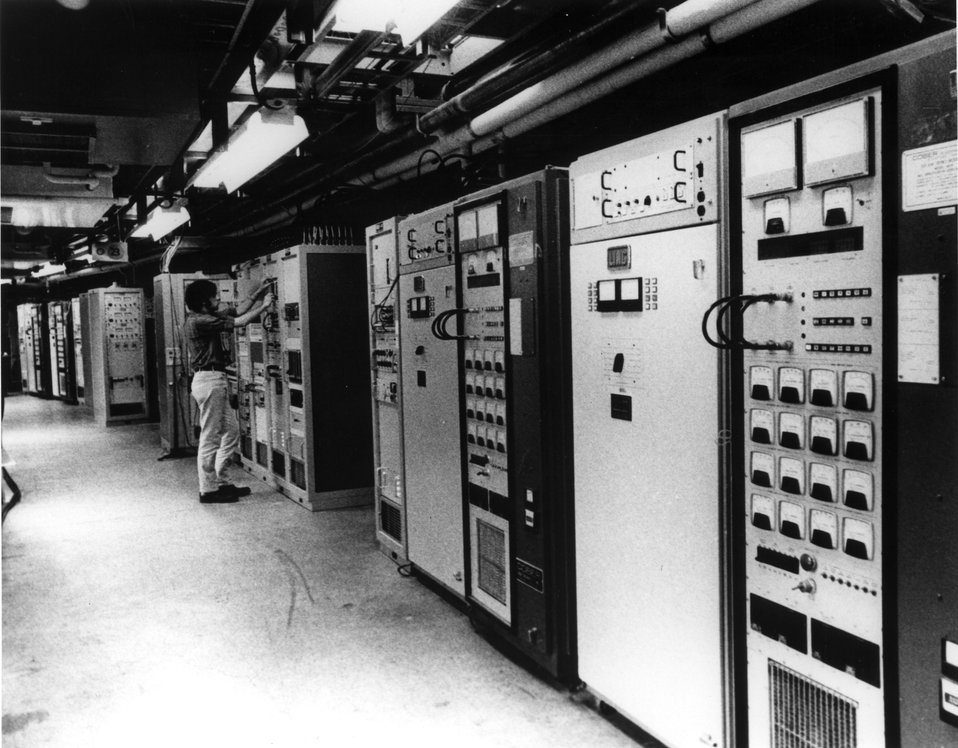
An employee adjusting controls in the west gallery of the National Accelerator Laboratory Booster Accelerator. c. 1974